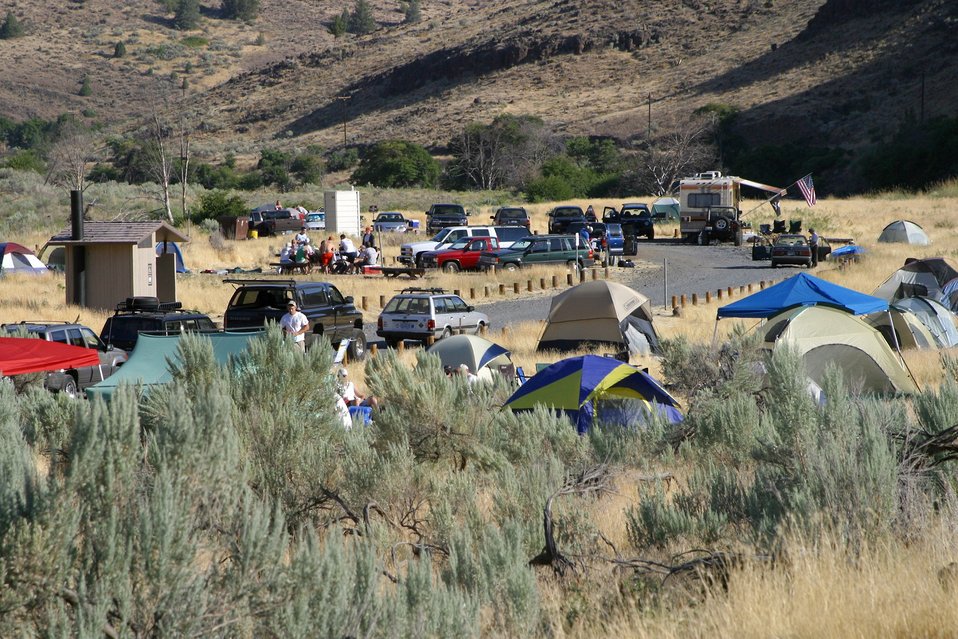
Campground at Harpham Flat boat ramp.